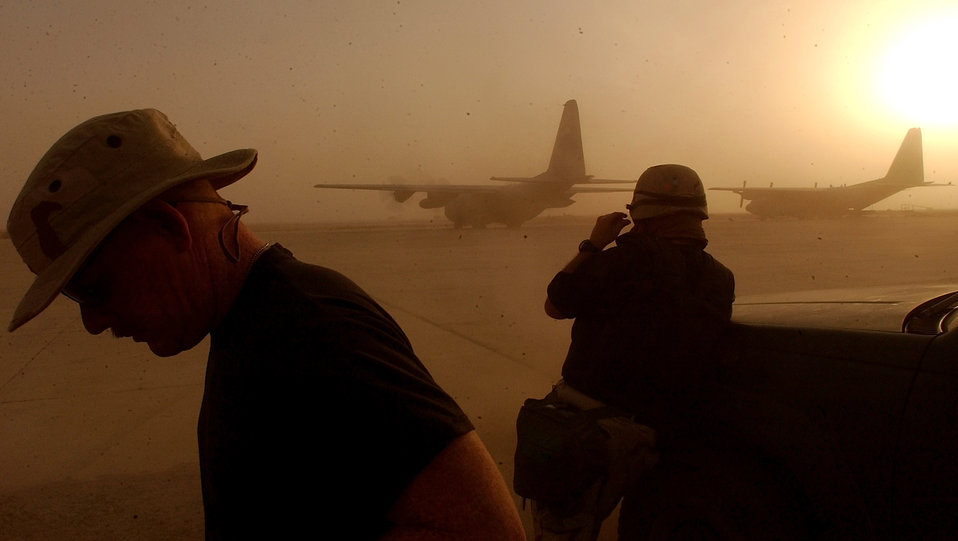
Dusty take off

OPERATION IRAQI FREEDOM -- Master Sgt. Donald Dougherty and Senior Master Sgt. T.J. Jones, both with 621st Tanker Airlift Control Element, watch as a C-130 Hercules prepares to take off from an undisclosed location April 1. Dougherty and Jones are deployed from the 821st Air Mobility Squadron at McGuire Air Force Base, N.J., in support of Operation Iraqi Freedom.